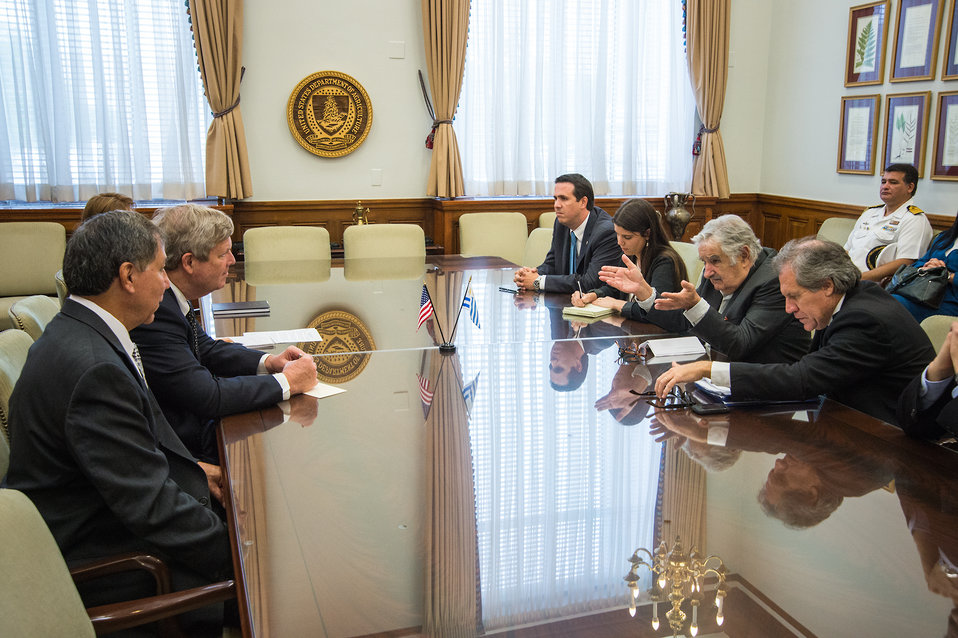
Agriculture Secretary Tom Vilsack and President Jose Mujica of Uruguay discuss cooperation in agricultural research, production and climate changes on agriculture at the U.S. Department of Agriculture (USDA) in Washington, D.C. on Wednesday, May 14, 2014. USDA Marketing and Regulatory Programs (MRP) Under Secretary Ed Avalos and USDA Farm and Foreign Agricultural Services (FFAS) Deputy Under Secretary Darci Vetter participated in the discussion.